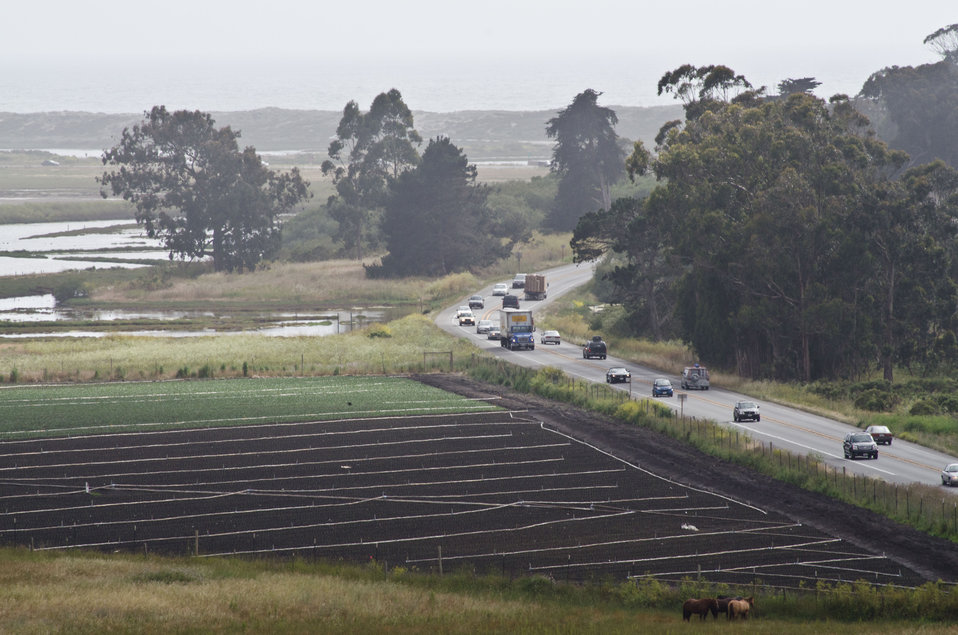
California Highway 1 (right), Bennett Slough (waterway, left), sprinkler irrigated farm (foreground), sand dunes and Monterey Bay National Marine Sanctuary (Pacific Ocean, background) at Moss Landing, CA on Thursday, June 16, 2011.